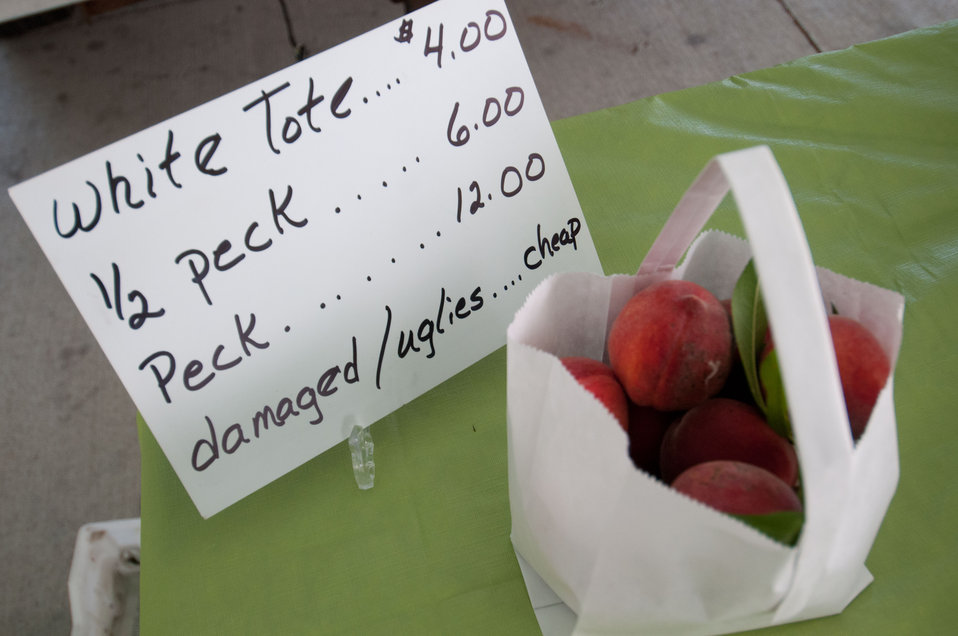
Peaches for sale at the Bath County Agricultural Education and Marketing Center, Owingsville, KY, on Friday, July 15, 2011. The Center was the recipient of a $400,000 Rural Business Enterprise Grant. It has given farmers and producers from Bath and surrounding counties the opportunity to manufacture and market their locally grown and locally produced value-added and “Kentucky Proud” branded products, including but not limited to, fresh produce, artisan crafts and specialty food products. The Center is open year-round and allow residents to sell products in four different retail categories, including Kentucky products, regional crafts, “green” groceries and bakery/deli. Several producers expressed their gratitude for Rural Development’s assistance in making the center a reality. The project was made possible through funding the American Recovery and Reinvestment Act of 2009 enacted by the 111th United States Congress in February 2009 and signed into law on February 17, 2009, by President Barack Obama.